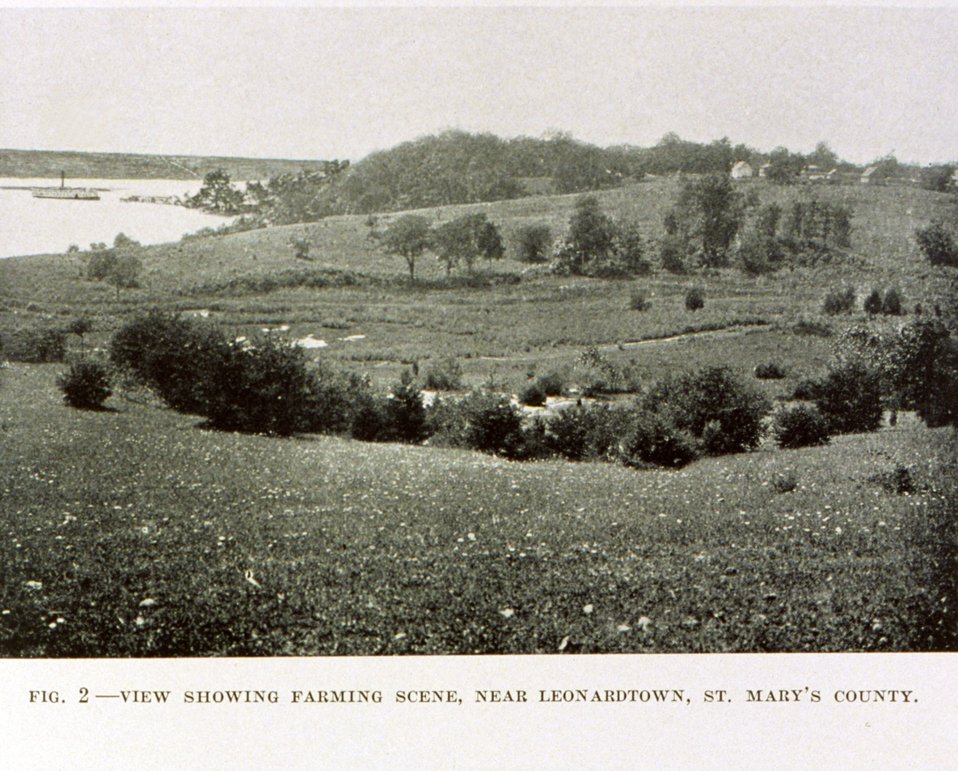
Farm scene near Leonardtown, St. Mary's County, along an arm of the Potomac.